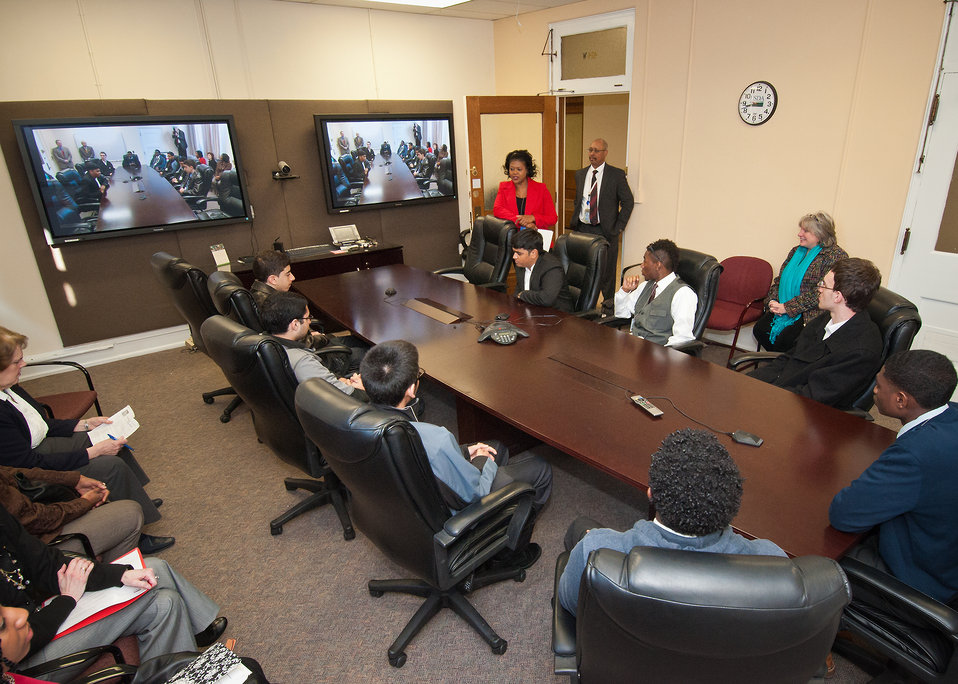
U.S. Department of Agriculture (USDA) Office of the Chief Information Officer (OCIO) Associate Chief Yvonne Jackson explains the depth and breadth of Information technology services to students from Edison Academy in Fairfax, VA during the annual USDA Information Technology (IT) Job Shadow Day held by the USDA OCIO to introduce local high school students to careers in information technology in Washington, D.C. on Tuesday, Apr. 2, 2013.